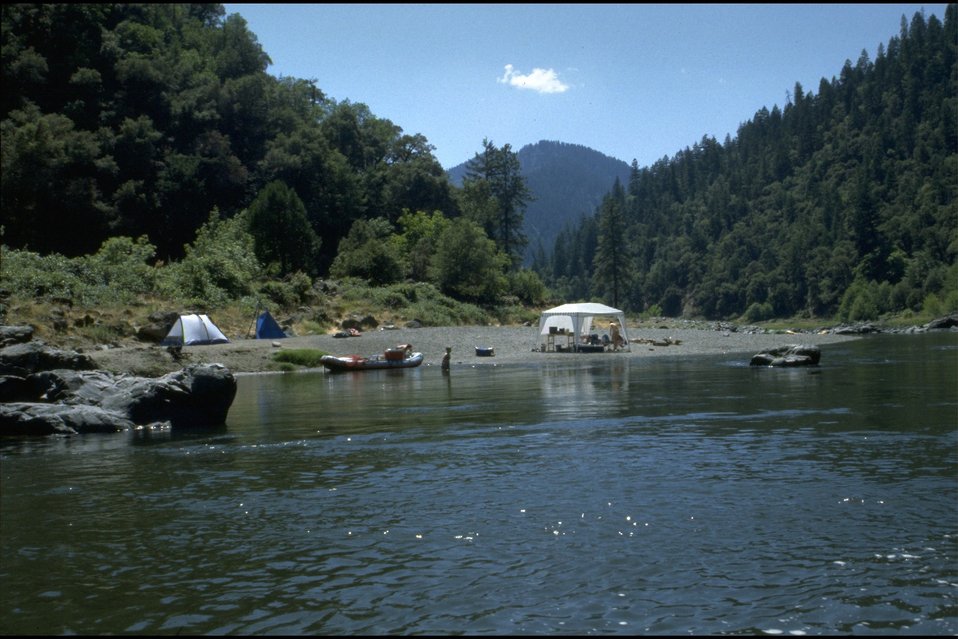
Rogue River - Wild Cat. Wild section camp.